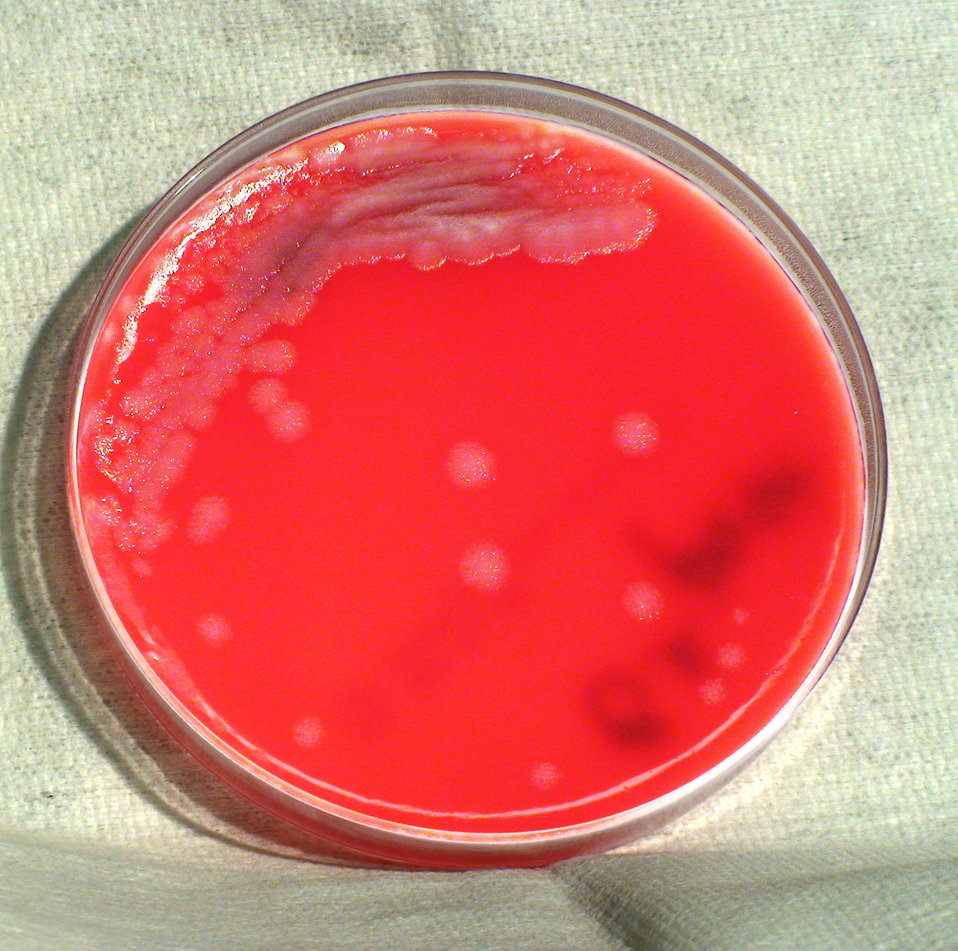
This photograph depicts the colonial morphology displayed by Gram-positive, Pasteur strain, Bacillus anthracis bacteria, which was grown on a medium of phenylethyl alcohol agar (PEA), for a 24 hour time period, at a temperature of 37�C. See PHIL 12393 for a closer view of these bacterial colonies. B. anthrax is the bacterial pathogen, which causes the disease known as anthrax.